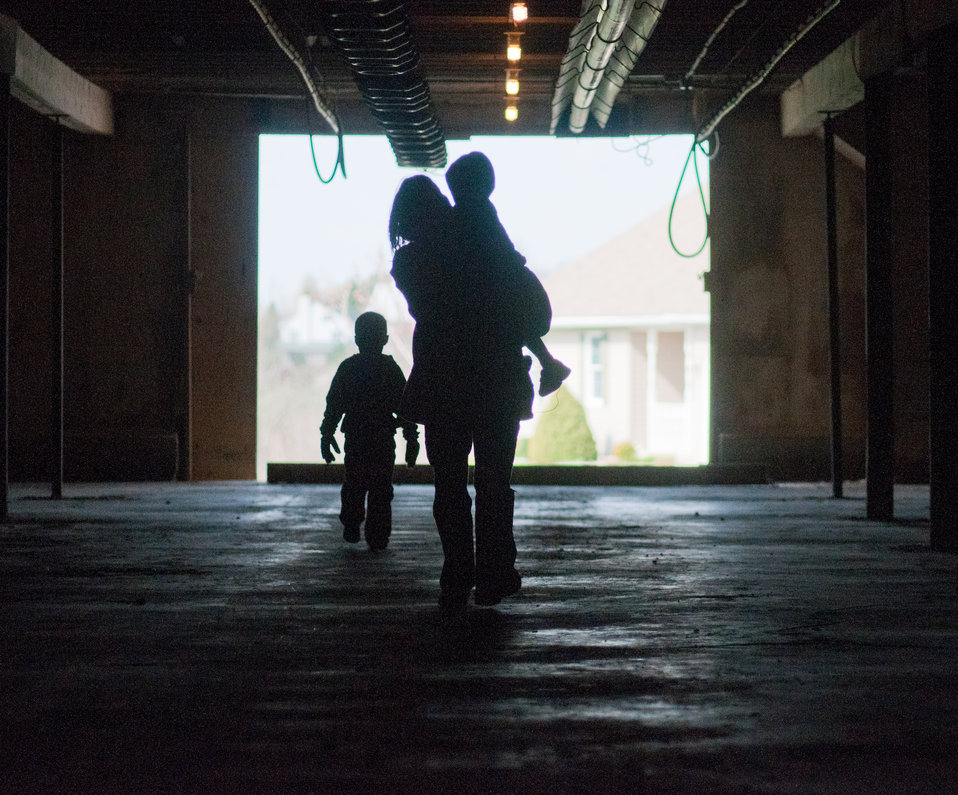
Roxanne Molnar carries Gavin (2) while Grant (5) walks with them out of a chicken house to their home ahead on April 21, 2011. Roxanne and Matthew Molnar have an 80,000 poultry farm, in Grantville, PA and were recipients of a $20,000 Rural Energy for America Program (REAP) grant. The money is a portion of the cost to modernize the second of two 40,000 chicken capacity chicken houses. Gavin (2, right) and Grant Molnar (5, left) use a shovel to scour the floor for debris at the Roxanne Molnar Farm on April 21, 2011, in Grantville, PA. Roxanne and Matthew Molnar have an 80,000 poultry farm and were recipients of a $20,000 Rural Energy for America Program (REAP) grant. The money is a portion of the cost to modernize the second of two 40,000 chicken capacity chicken houses. Chickens need to be kept at a comfortable temperature to remain productive. New radiant heaters keep the chickens warm during Pennsylvania winters. On warm days, ceiling vents provide passive venting of heat out of the building; when chicken house temperatures are estimated to be above 90 degrees, fans come on, pulling air through water evaporator elements lowering air temperature down 10-15 degrees and flows along the chicken house's length, in effect a tunnel of cooled air. The benefits to the chickens are heat and excess moisture removal; minimized dust and odor; limits buildup of ammonia and carbon dioxide; and provides oxygen for respiration. All these systems are computer controlled allowing owner, Roxanne Molnar to run the farm by herself and raise two small boys Gavin (2) and Grant (5). Husband, Matthew works off the farm and frequently travels, so along with the demands of parenting and manually controlling fans, vents, and having to remove the 80,000 chickens from their feeders and moving them around to cool them was an increasingly daunting task. The computer controls of the new system automate many of the daylong tasks allowing the Molnar’s to run their family farm. USDA Photography by Lance Cheung.